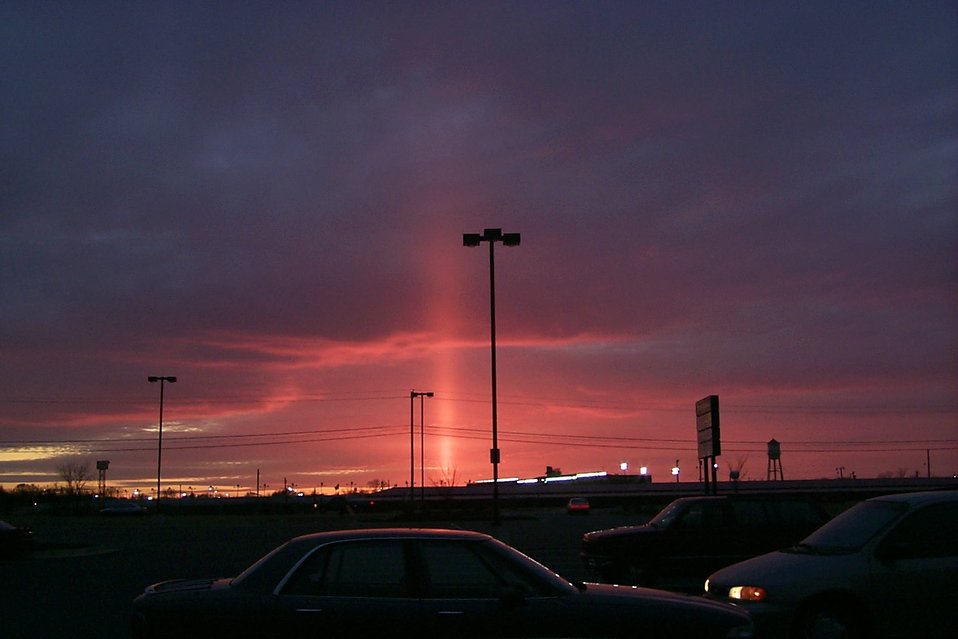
A sun pillar observed near Harpers Ferry, West Virginia at about 6:00 P. M. This pillar was visible in Silver Spring, Maryland, about 50 miles to the southeast at approximately the same time.